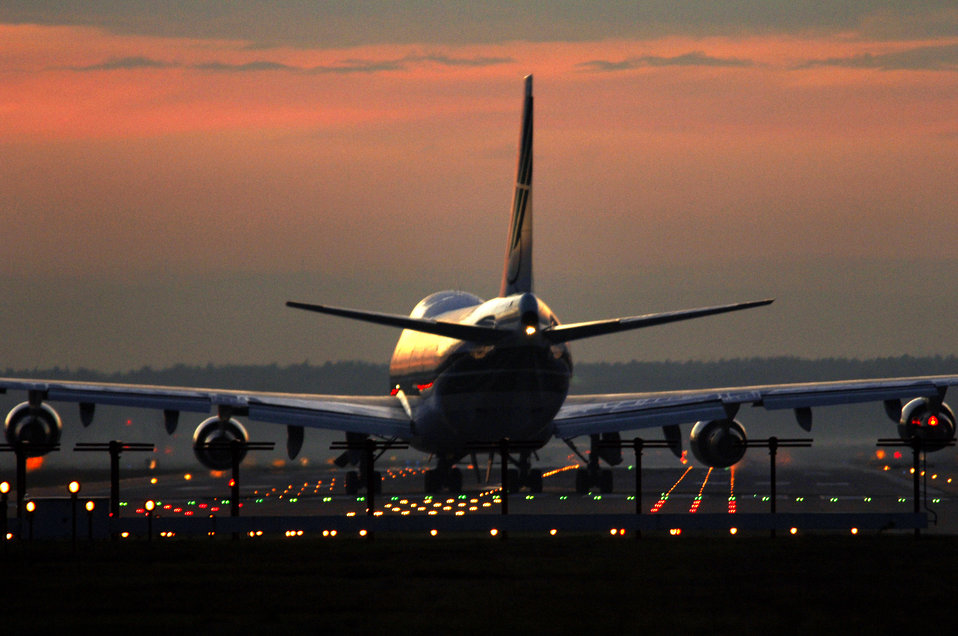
The sky is the limit

A Boeing 747-200 aircraft prepares for takeoff Nov. 3 at Ramstein Air Base, Germany. Ramstein AB officials handle more than 85 aircraft operations daily.